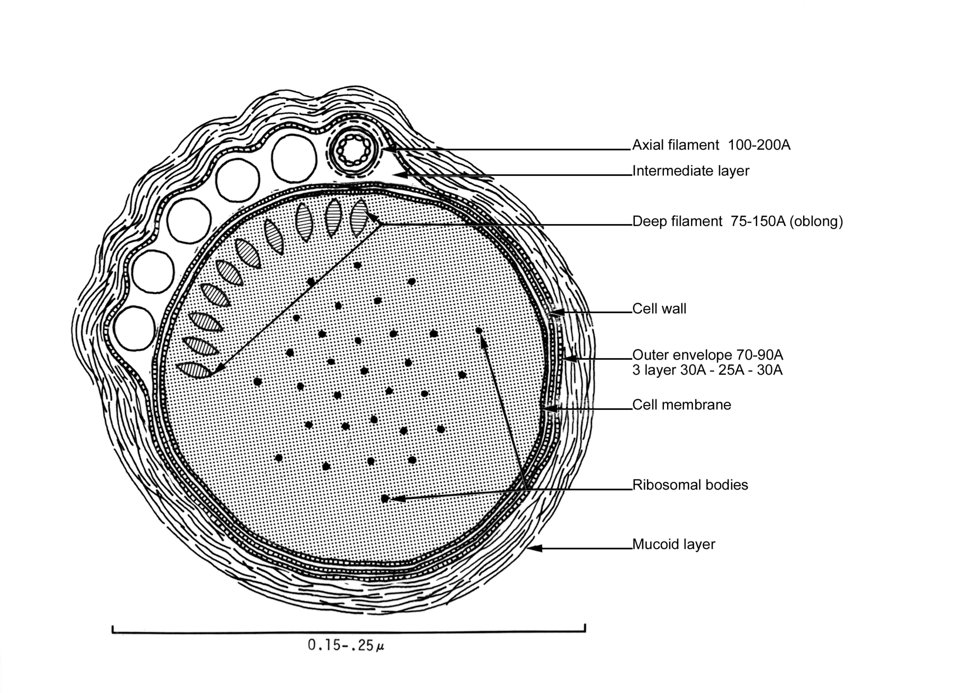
A schematic illustration of a cross section of a Treponema pallidum bacterium.